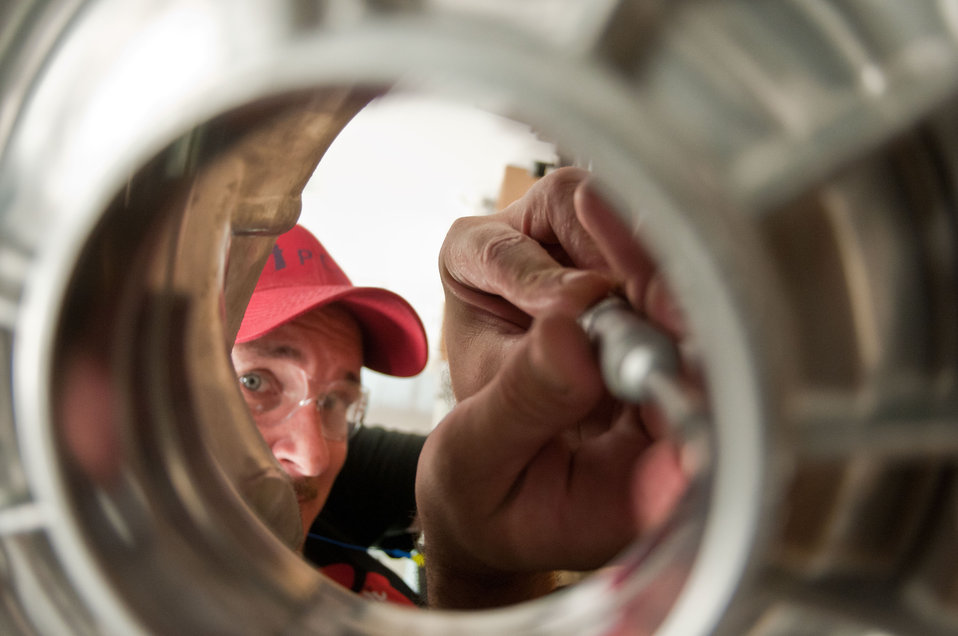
Quality Control Specialist Tim Russell uses a specialized micrometer to measure of machining performed at Port City Group’s Port City Castings Corporation manufactures high-pressure aluminum die-castings, mostly for the automotive industry, in Muskegon, MI, facility on Wednesday July 20, 2011. Port City Group boosted its employment by 12 percent over last year thanks to two Rural Business Guaranteed Loans totaling $9.6 million. In its 80,000 sq. ft. facility, machines that range from 800 – 1,600 tons, and cast A380 aluminum alloy products from melted ingots of aluminum, into automotive components of U.S.A. made vehicles. The process features a variety of robotic presses; computer controlled machining; quality control facility; and complete measurement and testing laboratory. In 2009 banks were backing out of loans for PCG equipment purchase agreements. The U.S. Department of Agriculture (USDA) loan guarantee helped make the loan possible with its guarantee. PCG obtained the needed robotic and other equipment. This resulted in a stable workforce that has since grown. When asked about their USDA experience, Port City Group Sales Manager Laura LaGuire said, “It was great! They were very helpful. Everything that came up was handled smoothly, the money came in place when it was needed, and it was a very smooth transition.”